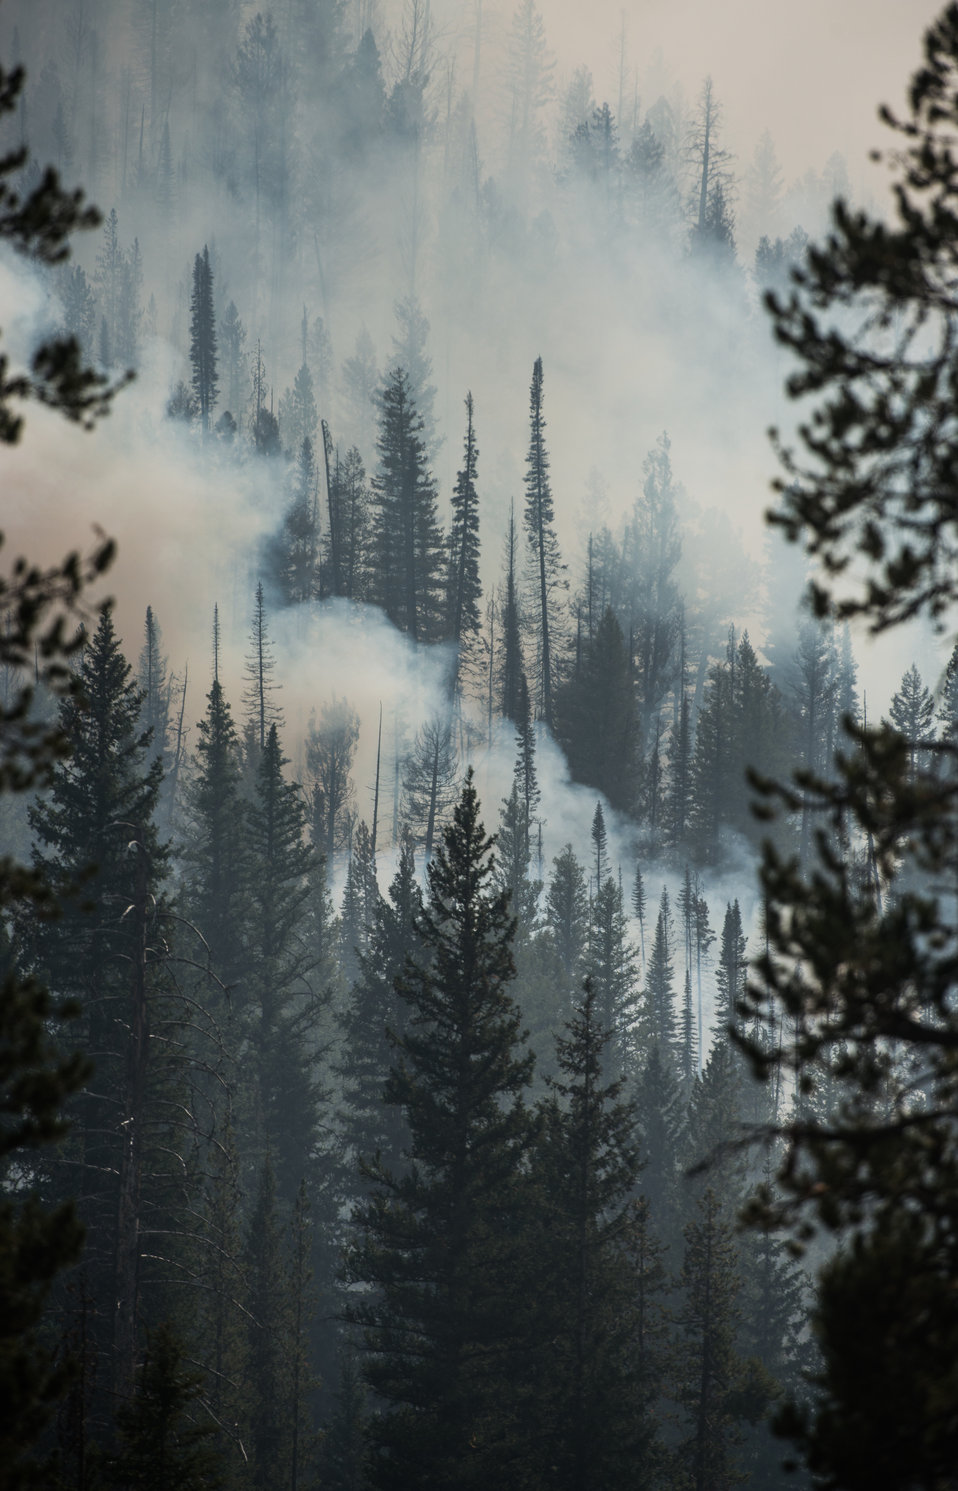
Structure protection, burnout of roads and natural barriers will help slow the progression of the main fire in the East Fork of Baker Creek, in the Sawtooth National Forest, during the Beaver Creek Fire, northwest of Hailey, ID, on Tuesday, Aug 20, 2013. Many homes are nestled in thick groves of trees. Feller and skidders are used to thin the density of trees close to homes.